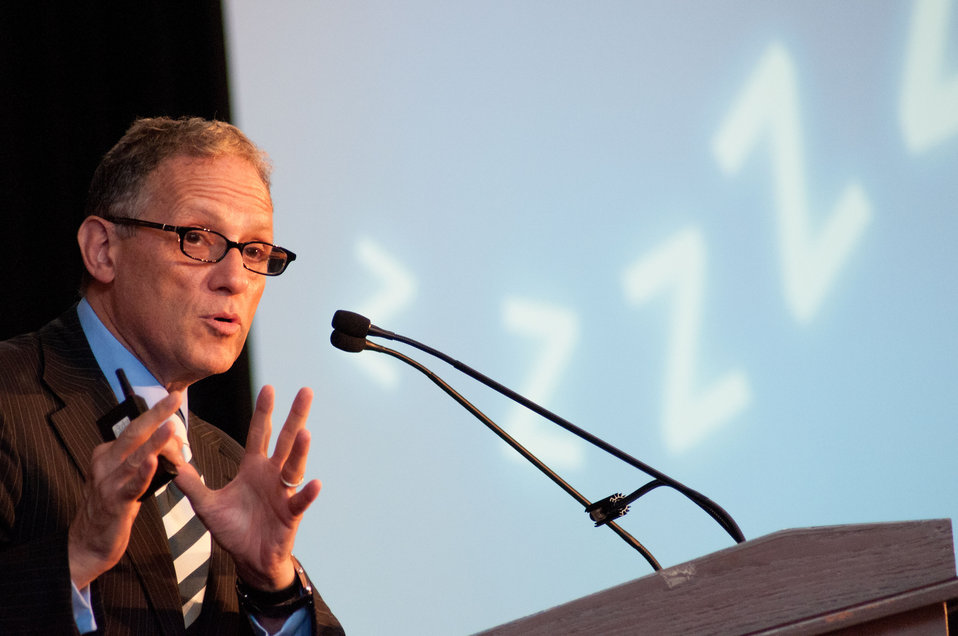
Fred Hochberg, Chairman of the Export Import Bank of the United States speaks at the National Export Initiative (NEI) Small Business Tour in Milwaukee, WI, on Wednesday, August 3, 2011. An important goal of the NEI is to provide additional assistance to small and medium-sized businesses, which are major drivers of job creation. The NEI is assisting small and medium-sized businesses win more foreign government contracts, find buyers worldwide, participate in more trade missions and trade shows, receive more export financing, and learn new ways to sell products and services overseas.